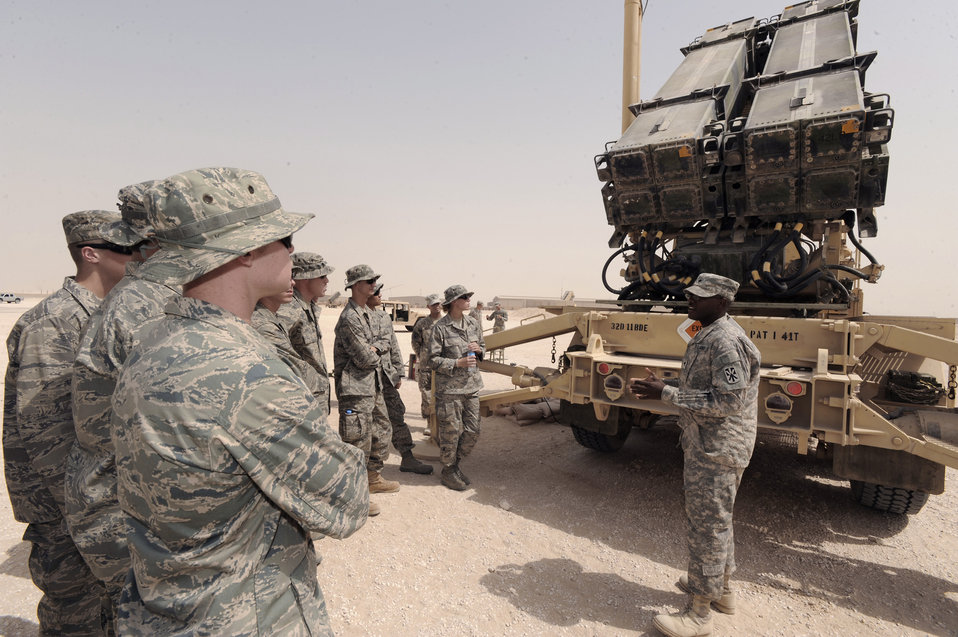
Cadets experience deployment tempo

Army Spc. John Dodson briefs U.S. Air Force Academy cadets on the Army mission June 24 at an undisclosed location in Southwest Asia. The cadets are part a program called Operation Air Force, which gives them exposure to the operational side of the Air Force and deployed locations before being commissioned.